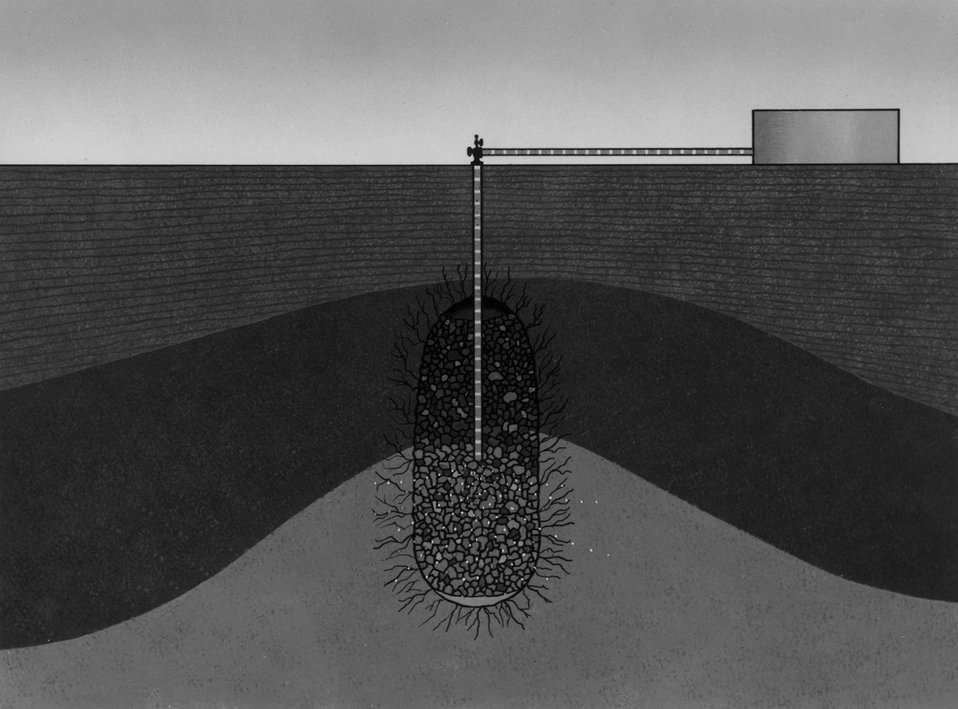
Artist's concept of the underground column (chimney) of broken rock and the surrounding fractured area produced by a nuclear explosion, being used to increase natural gas flow into a well. c. 1966